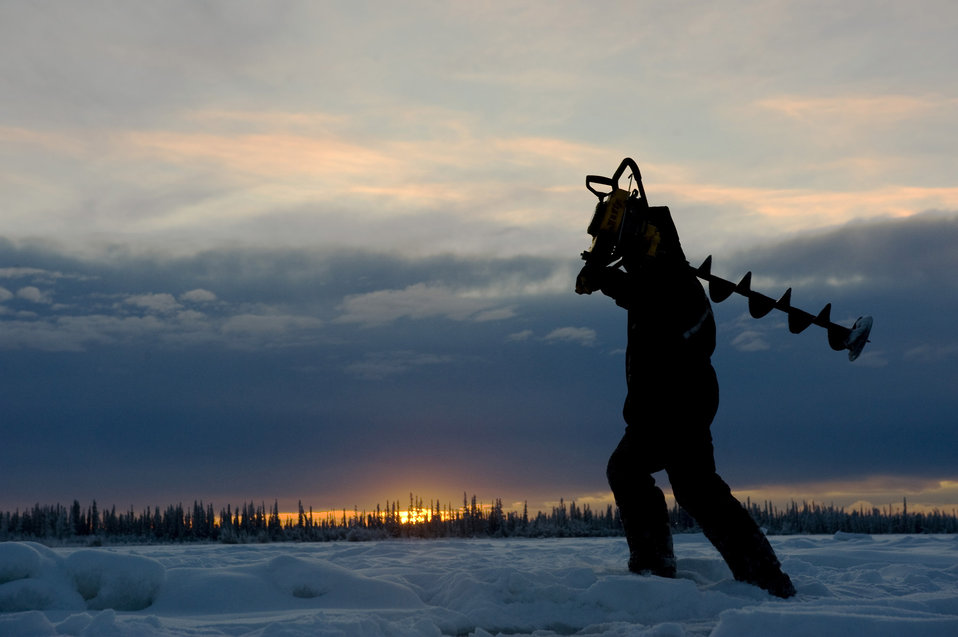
Where do I dig this one?

Airman 1st Class Caleb Hurley carries an ice auger on the frozen Tanana River Nov. 24 during construction of an ice bridge near Fairbanks, Alaska. The ice bridge is five-feet deep, a mile long and capable of supporting more than 110 tons. It completely vanishes in the spring.